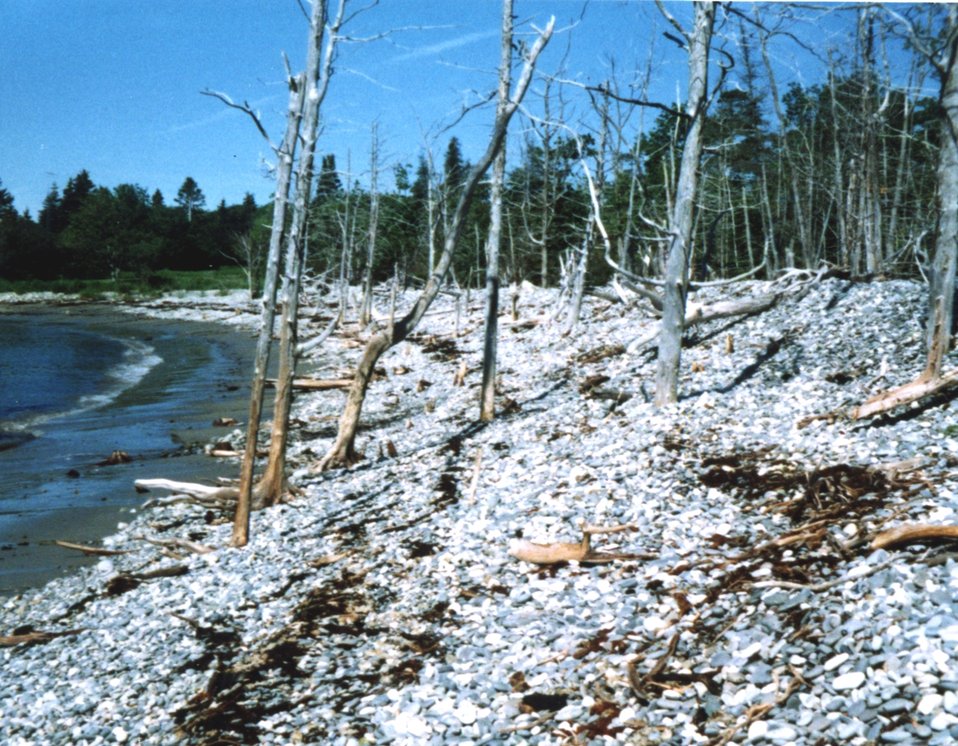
Mosquito Cove cobble beach showing progressive landward migration of shoreline.